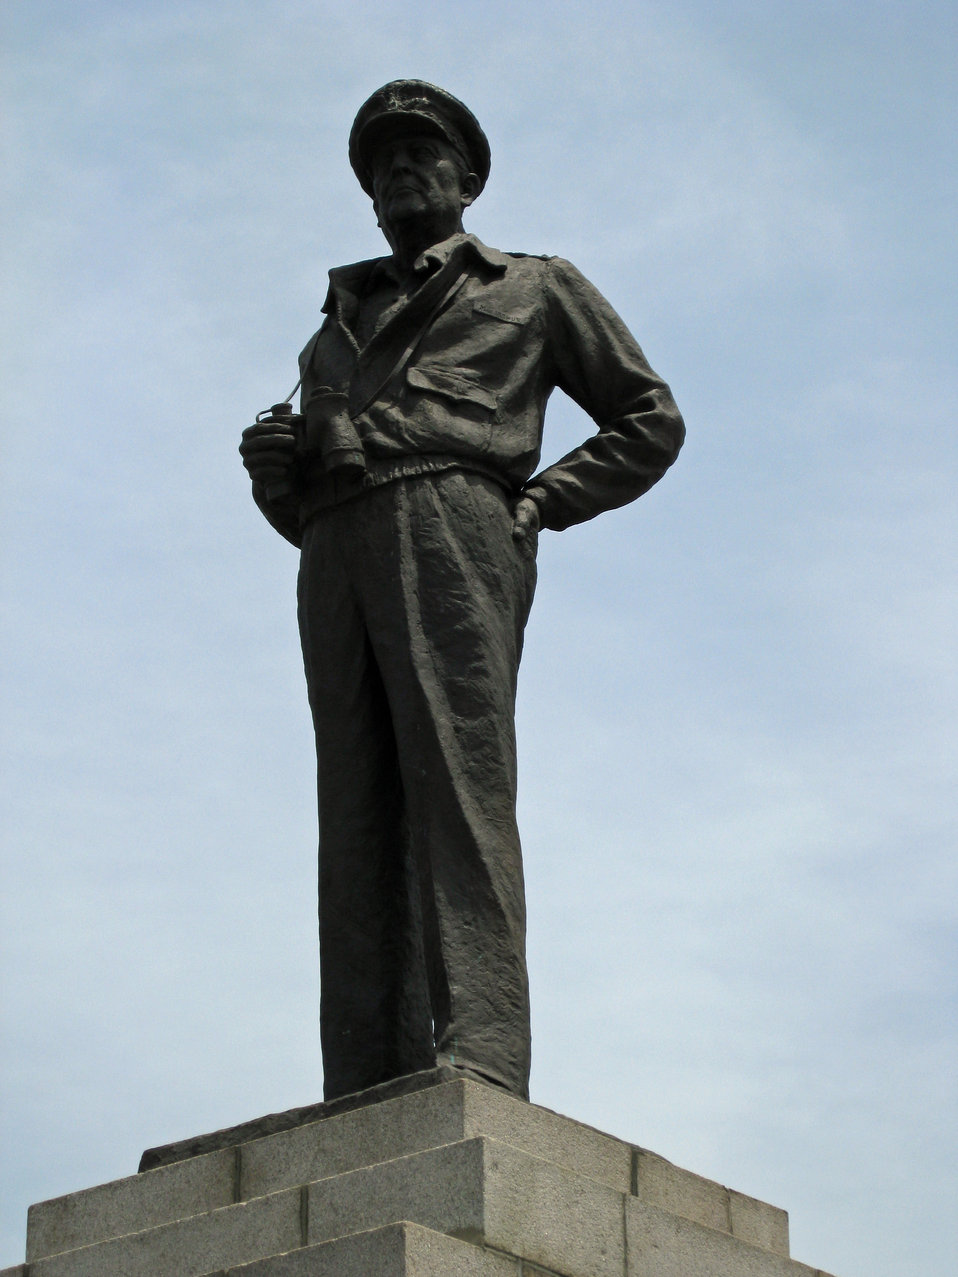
The statue of MacArthur at Jayu Park, close up.